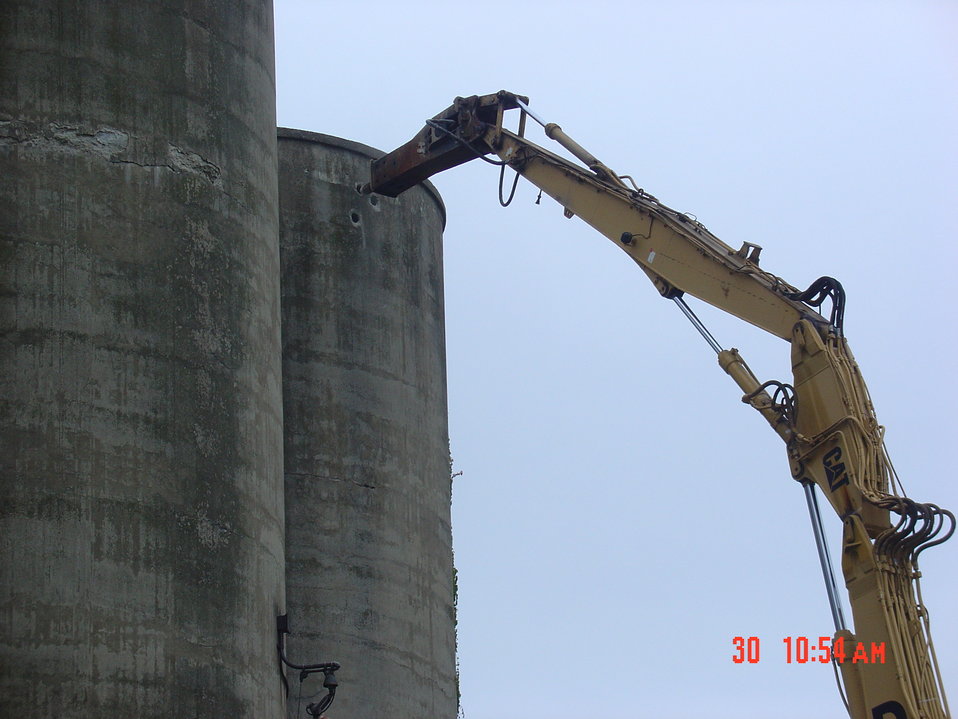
Building 401 silo first holes poked in demolition.

Activities from the Niagara Falls Storage Site, which is associated with the former Lake Ontario Ordnance Works. Formerly Utilized Sites Remedial Action Program (FUSRAP), a program initiated in 1974 to identify, investigate and clean up or control sites that were part of the Nation's early atomic energy and weapons program. Activities at the sites that are eligible for FUSRAP were conducted by Manhattan Engineer District (MED) or the Atomic Energy Commission (AEC), both predecessors of the Department of Energy (DOE). The U.S. Army Corps of Engineers was assigned management of FUSRAP by Congress in 1997.